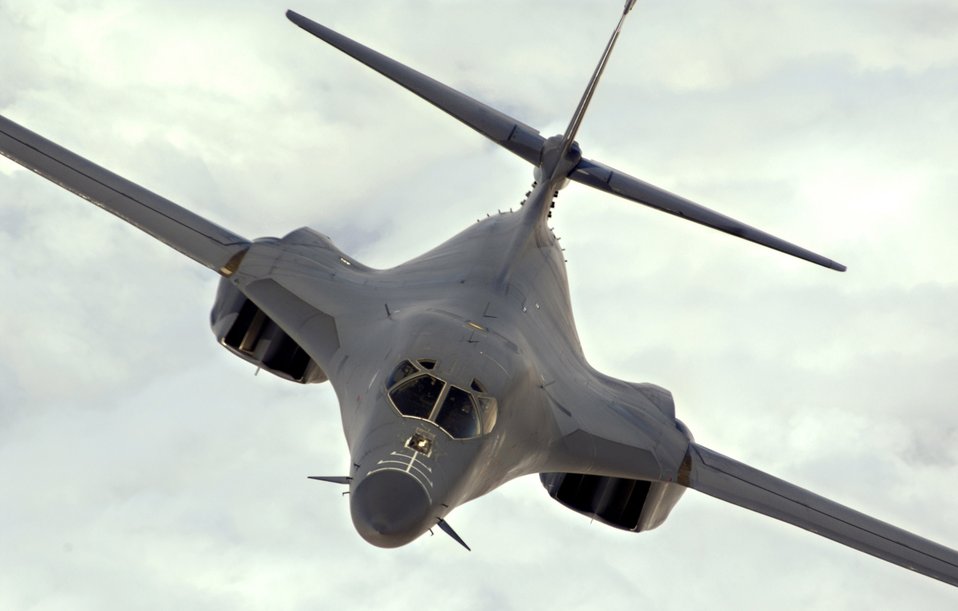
March 25 airpower summary: B-1B protects coalition forces

An Air Force B-1B Lancer flies a mission over Afghanistan. The B-1B can rapidly deliver massive quantities of precision and non-precision weapons against any adversary, anywhere in the world, at any time.